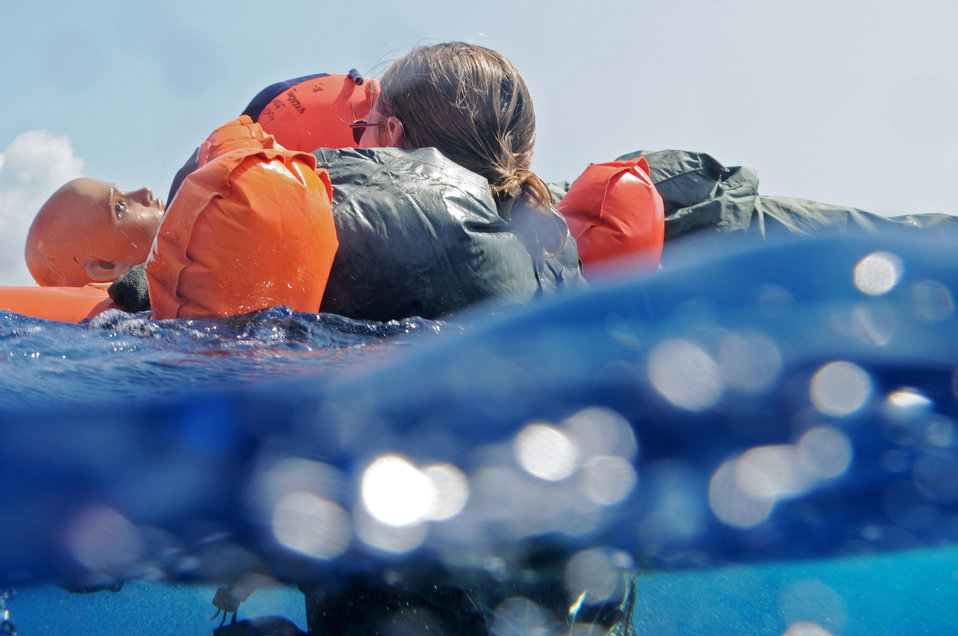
Kadena Airmen test readines during exercise

1st Lt. Leslie Woll tends to a